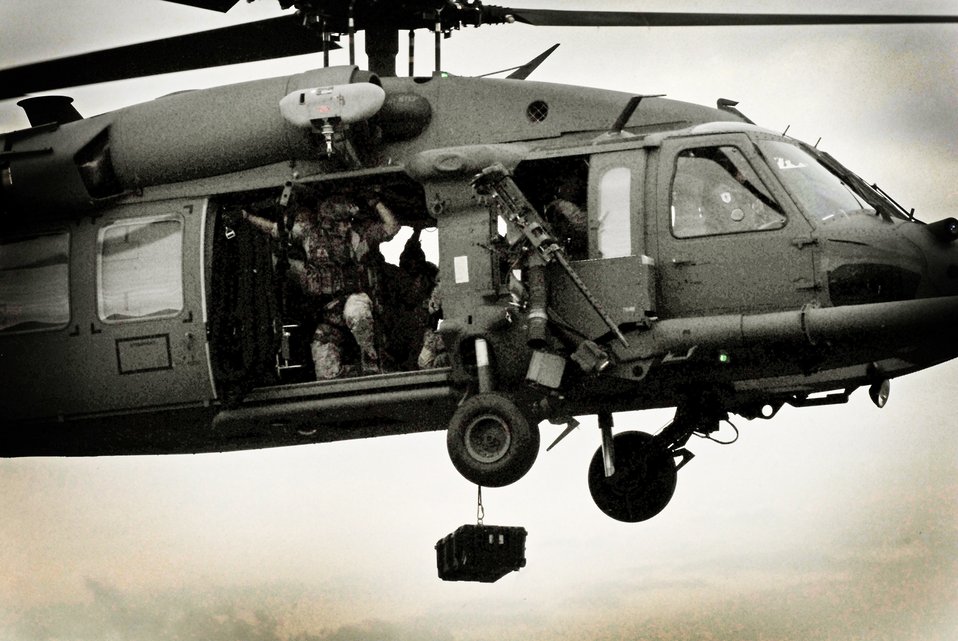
Supplies going down

Pararescuemen from the 31st Rescue Squadron send emergency equipment down from an HH-60 Pave Hawk helicopter during the unit's Rescue Fest Feb. 20, 2010, at Kadena Air Base, Japan. Many servicemembers and their families watched demonstrations of the squadron's mission.